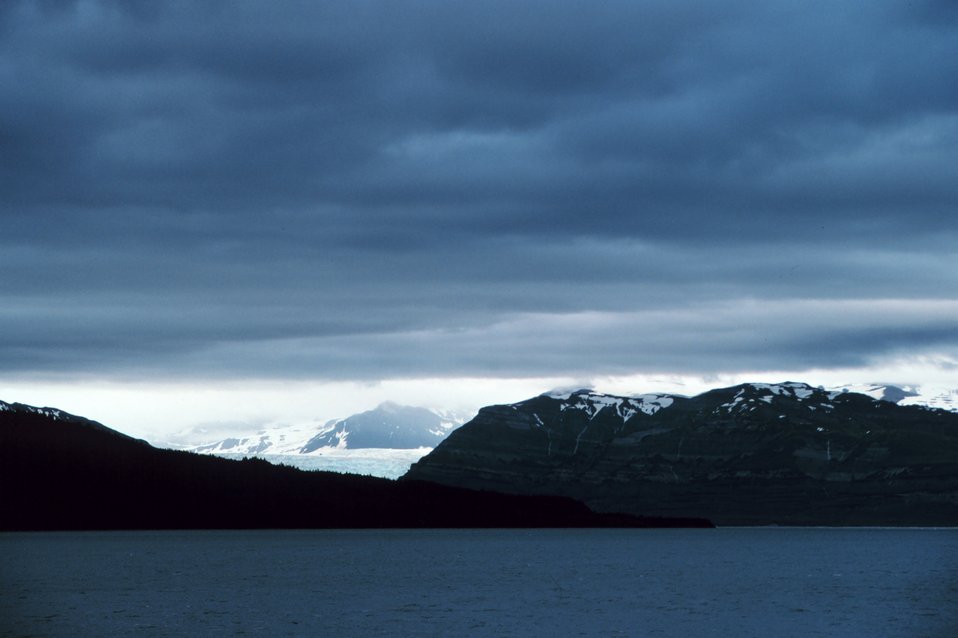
Icy Bay area.